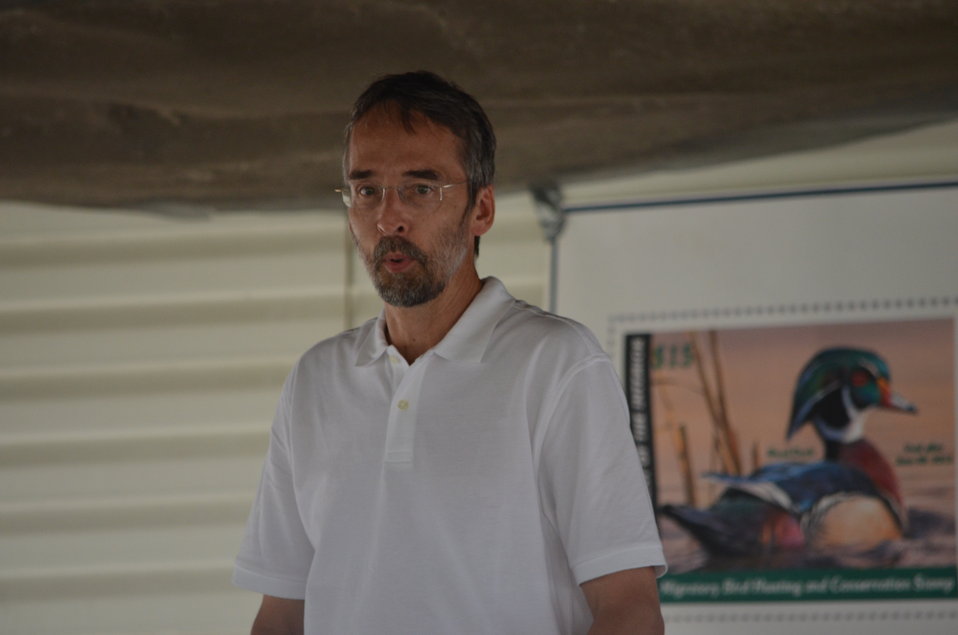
Four time winner of the Federal Duck Stamp Art and Design Contest Joe Hautman.